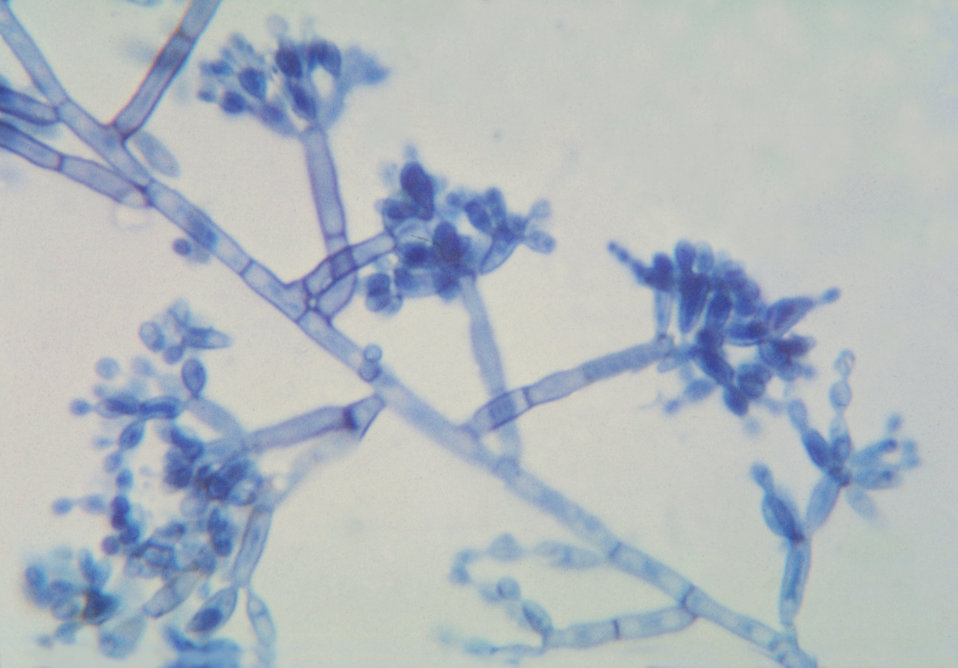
This is a photomicrograph of the dematiaceous, or dark colored fungi Fonsecaea pedrosoi.